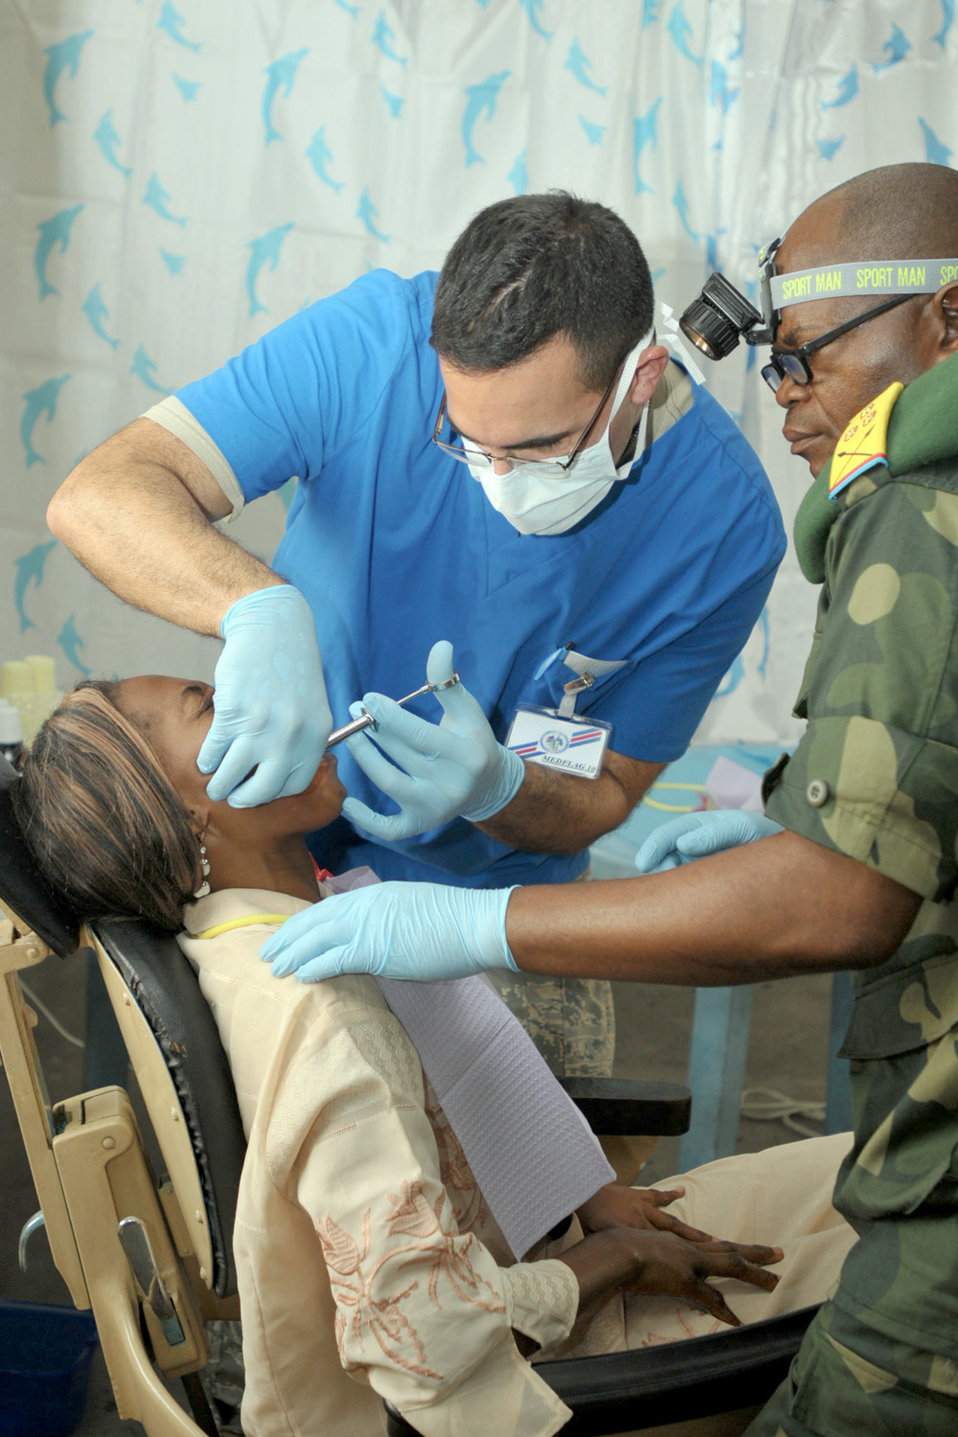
Air Force dentists bring relief to the Congo

Capt. (Dr.) Vincent Chippone alongside an Armed Forces of the Democratic Republic of the Congo dentist, prepares a patient for dental work Sept. 11, 2010, in Kinshasa, Democratic Republic of the Congo. Captain Chippone, a reservist with the 940th Aeromedical Dental Flight at Beale Air Force Base, Calif., is in the DRC as part of MEDFLAG 10, a joint training exercise with the U.S. and FARDC militaries focusing on humanitarian and civil assistance.